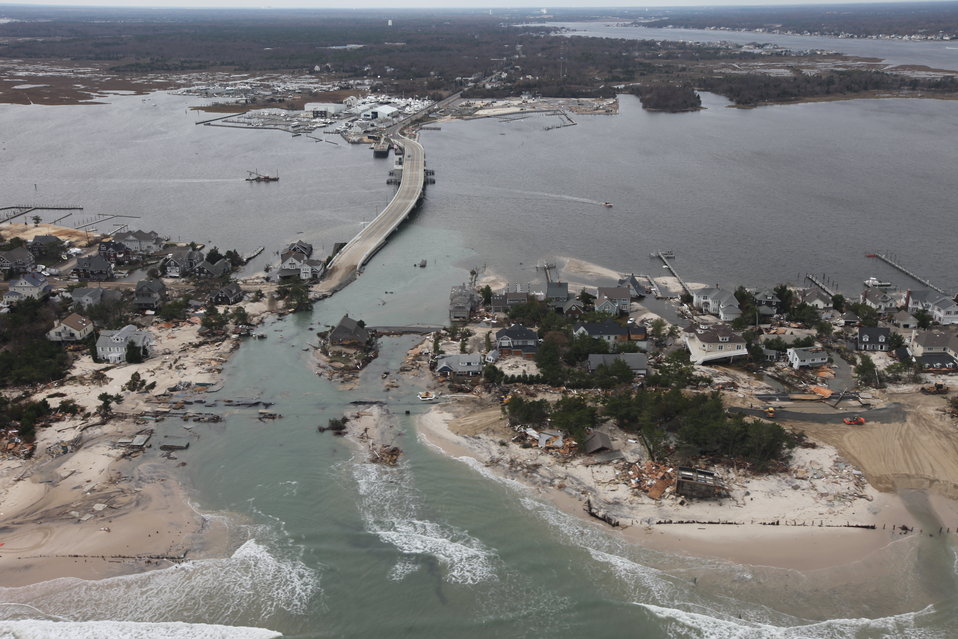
Storm damage along the New Jersey coast

Aerial photo of Mantoloking, New Jersey after Hurricane Sandy.